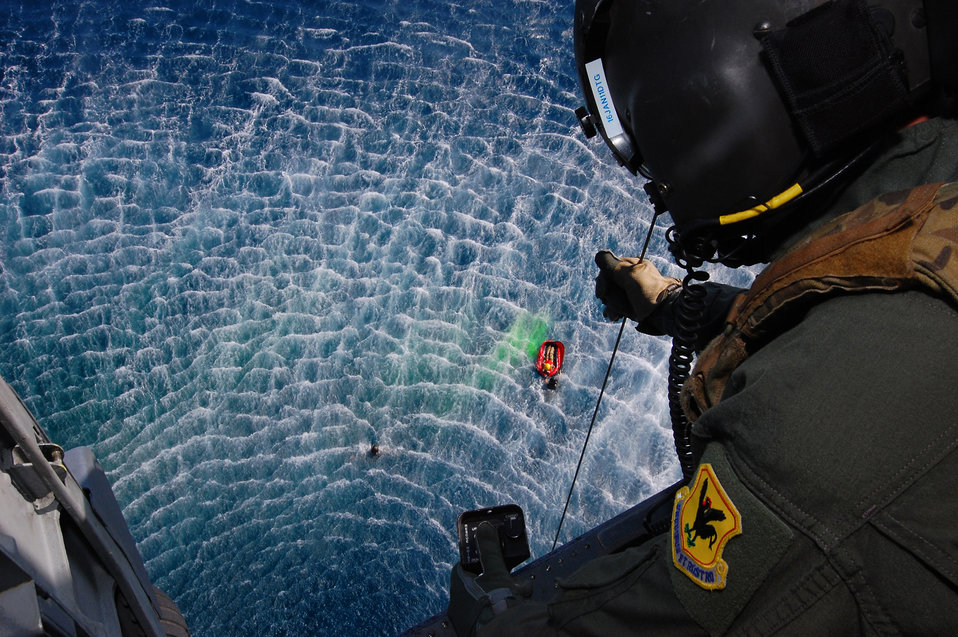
To the rescue

Senior Airman Jeremy Garrett lowers a Stokes rescue basket down into the waiting hands of the pararescuemen below during the Keen Sword exercise Dec. 6, 2010, at Kadena Air Base, Japan. Keen Sword 2011 will include an estimated 10,500 U.S. participants from the Army, Navy, Air Force and Marines. Airman Garrett is a flight engineer with the 33rd Rescue Squadron.